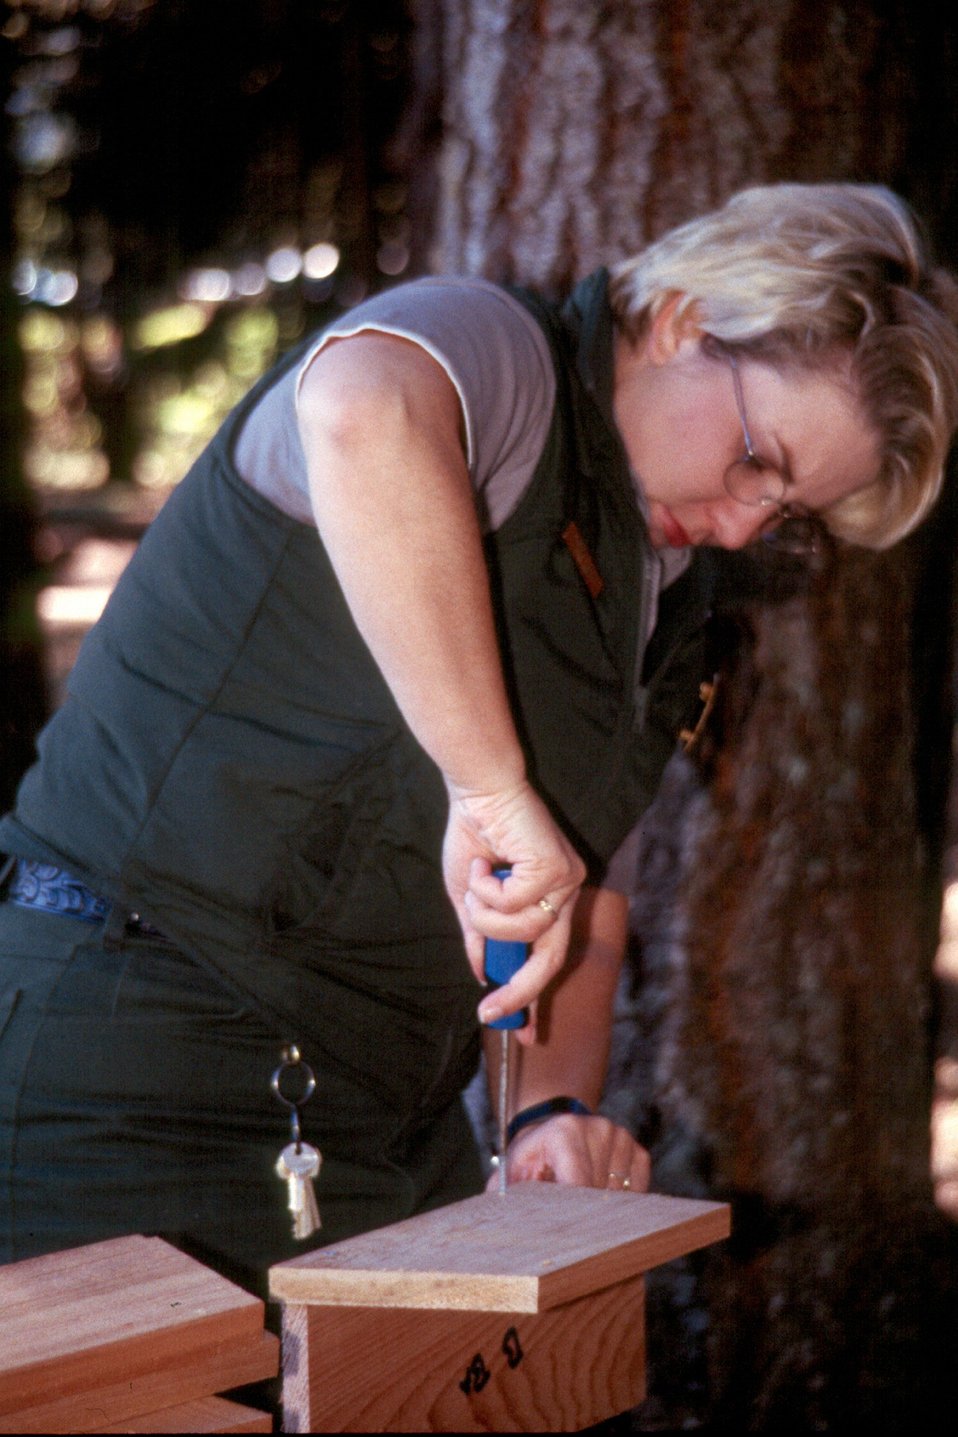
Corps employee Charlott Lister assembles a bird box